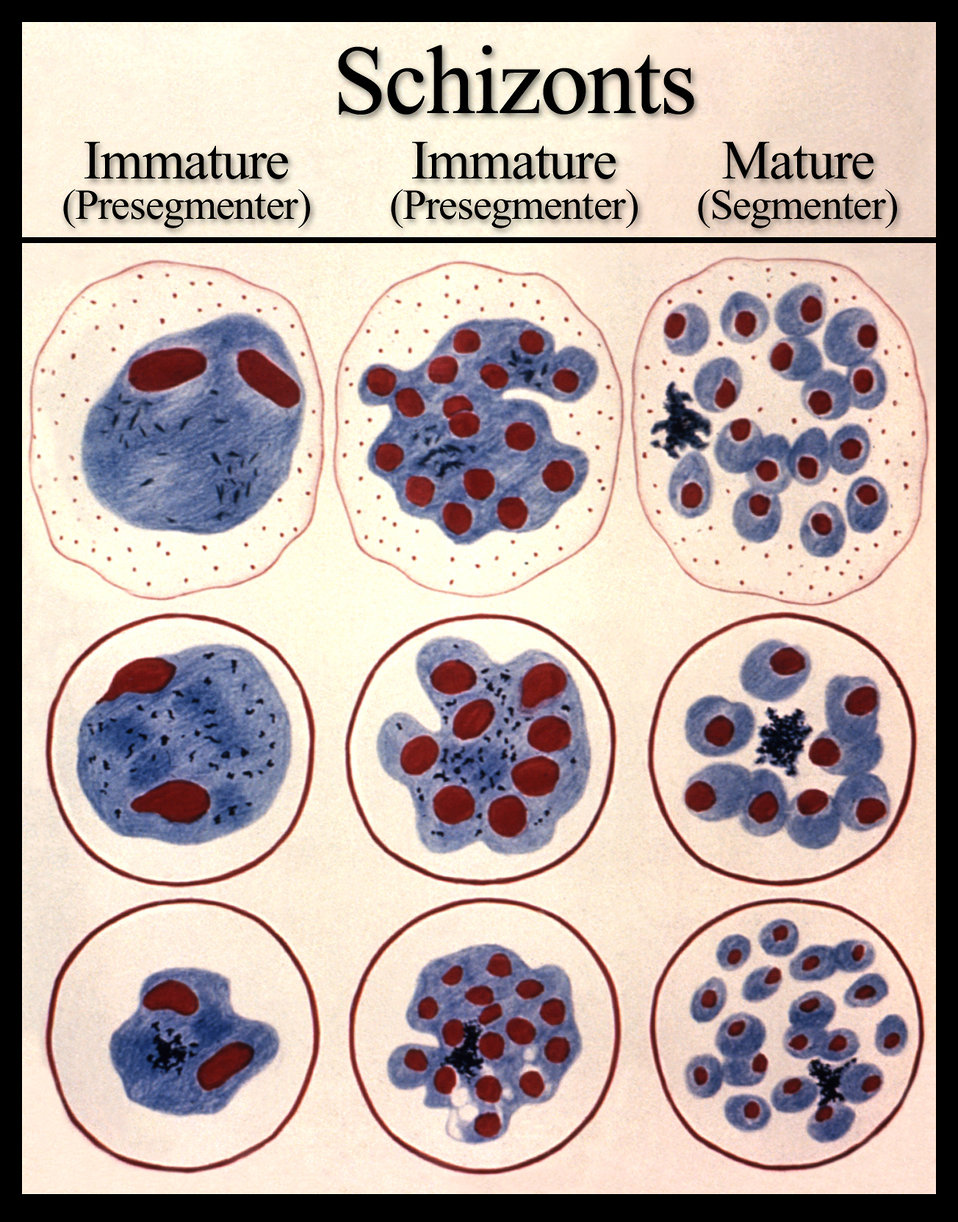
As a schizont, these are the various forms that the developing malarial parasite undergoes prior to the release of merozoites.